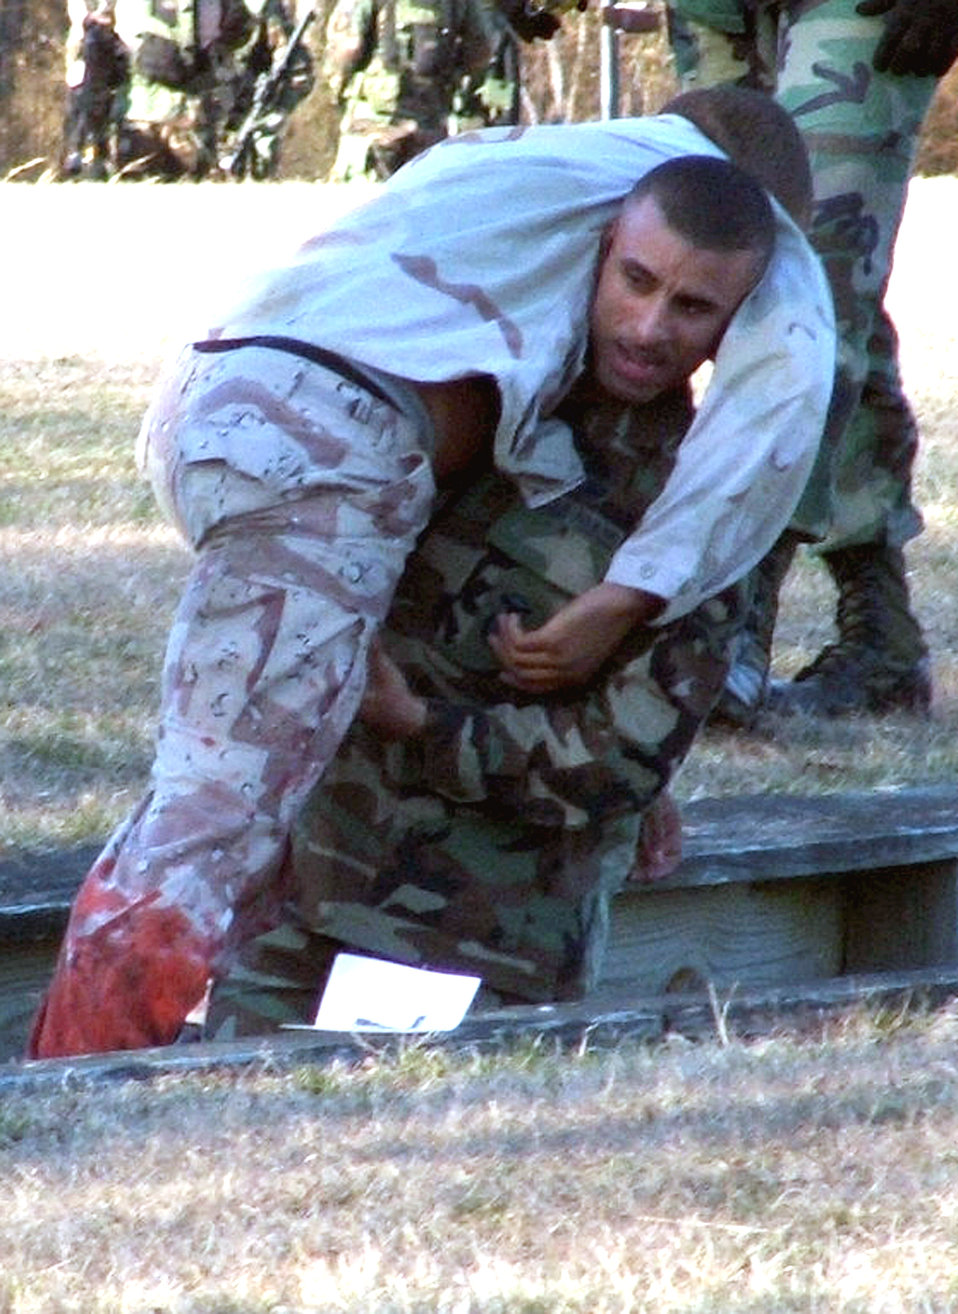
Phoenix Raven

Airman 1st Class Randell Rosado carries a simulated